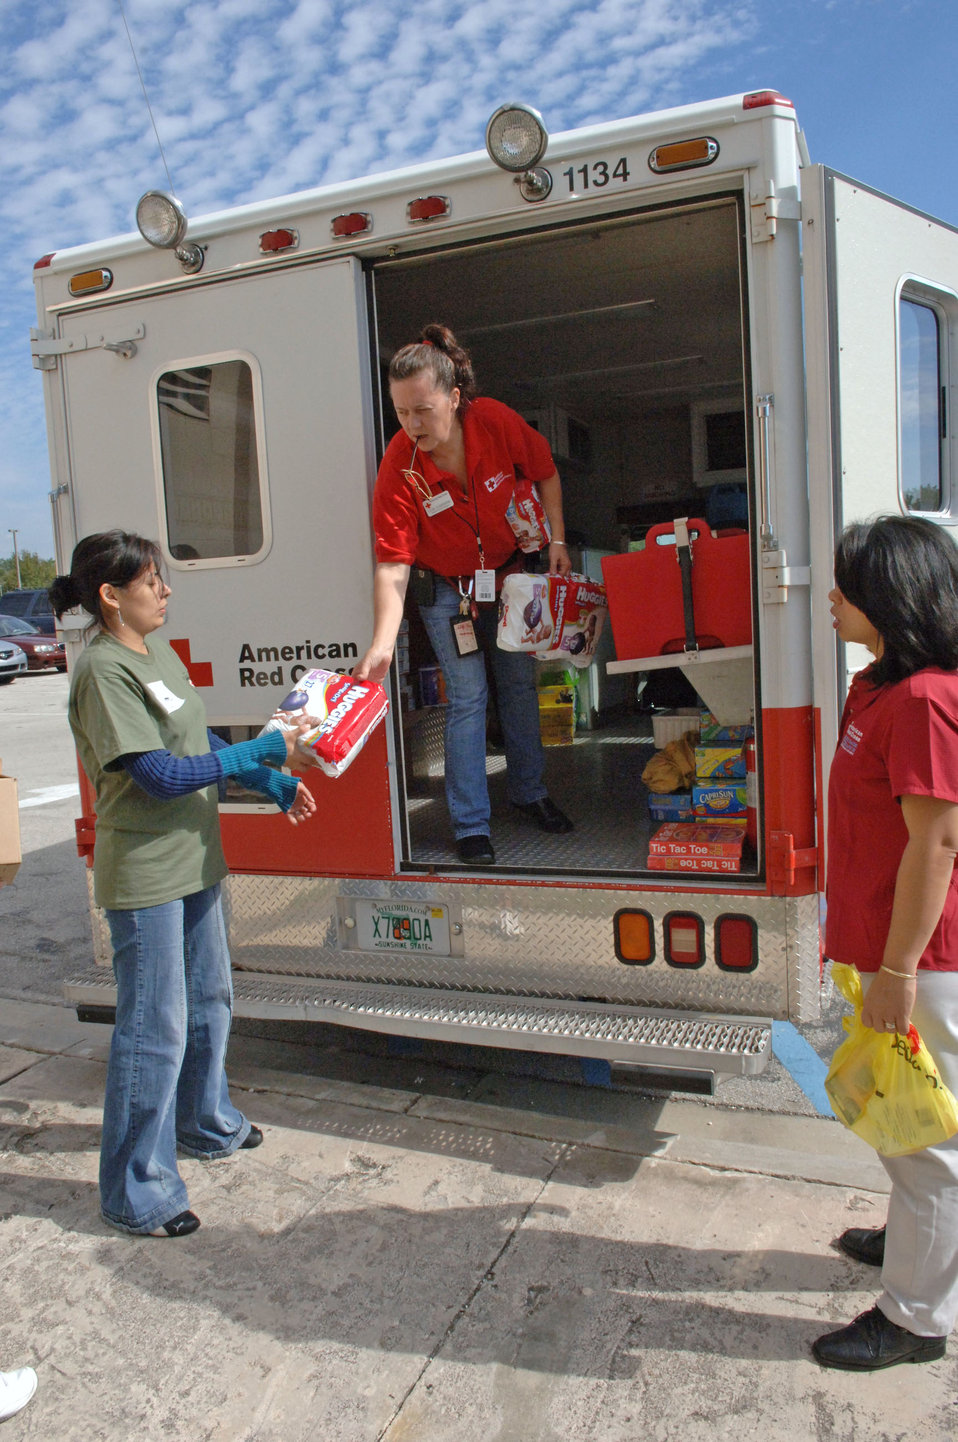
Operation Unified Response

Red Cross volunteers unload diapers for displaced evacuees from Haiti, Jan. 19, 2010, at Homestead Air Reserve Base, Fla. The Red Cross supported more than 1,500 evacuees being transported through Homestead ARB.